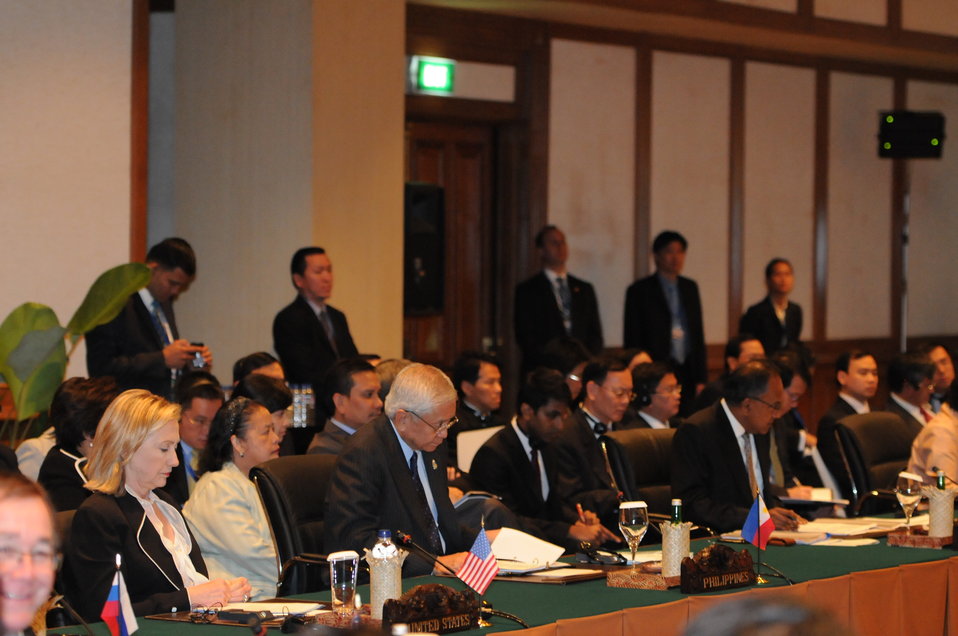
Secretary Clinton, Philippines Foreign Minister Rosario, and Singaporean Foreign Minister Shanmugam Participate in the East Asia Summit Foreign Ministers' Consultation

U.S. Secretary of State Hillary Clinton, Philippines Foreign Minister Albert del Rosario, and Singaporean Foreign Minister K. Shanmugam participate in the East Asia Summit Foreign Ministers’ Consultation in Bali, Indonesia, on July 22, 2011.